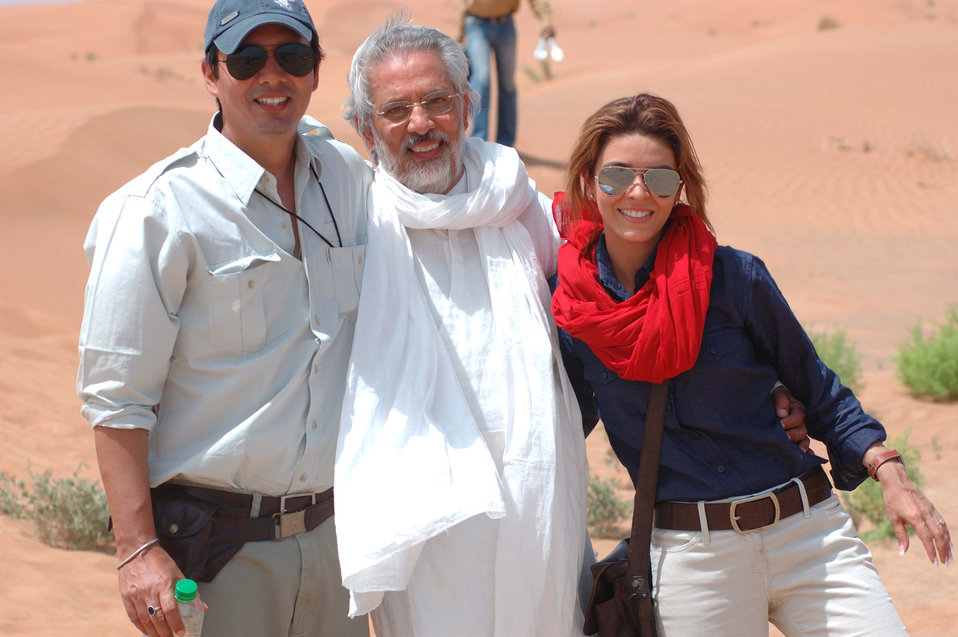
www.raageshwari.com Raageshwari (extreme right) with brother Rishabh Loomba (left) and father Trilok Loomba (centre)